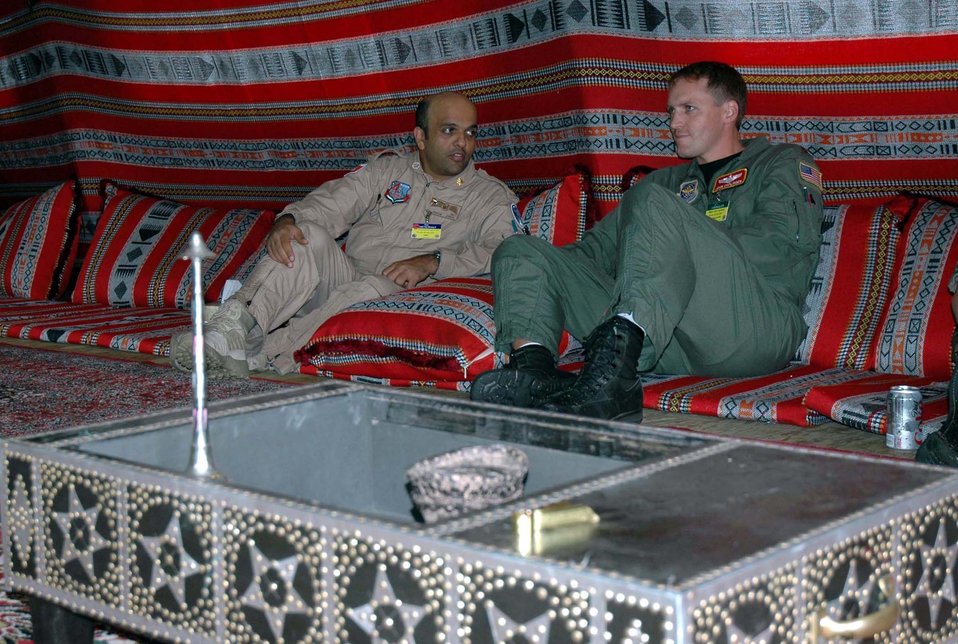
Cultures come together at Air Mobility Rodeo 2007

United Arab Emirates Maj. Jamal Al Awani (left) talks with Maj. John Caplinger July 20 at the UAE tent in Rainier Ranch at McChord Air Force Base, Wash. The UAE team is competing in its first Rodeo competition. Major Al Awani is the United Arab Emirates Rodeo team commander, and Major Caplinger is a pilot from the 10th Airlift Squadron from McChord AFB.